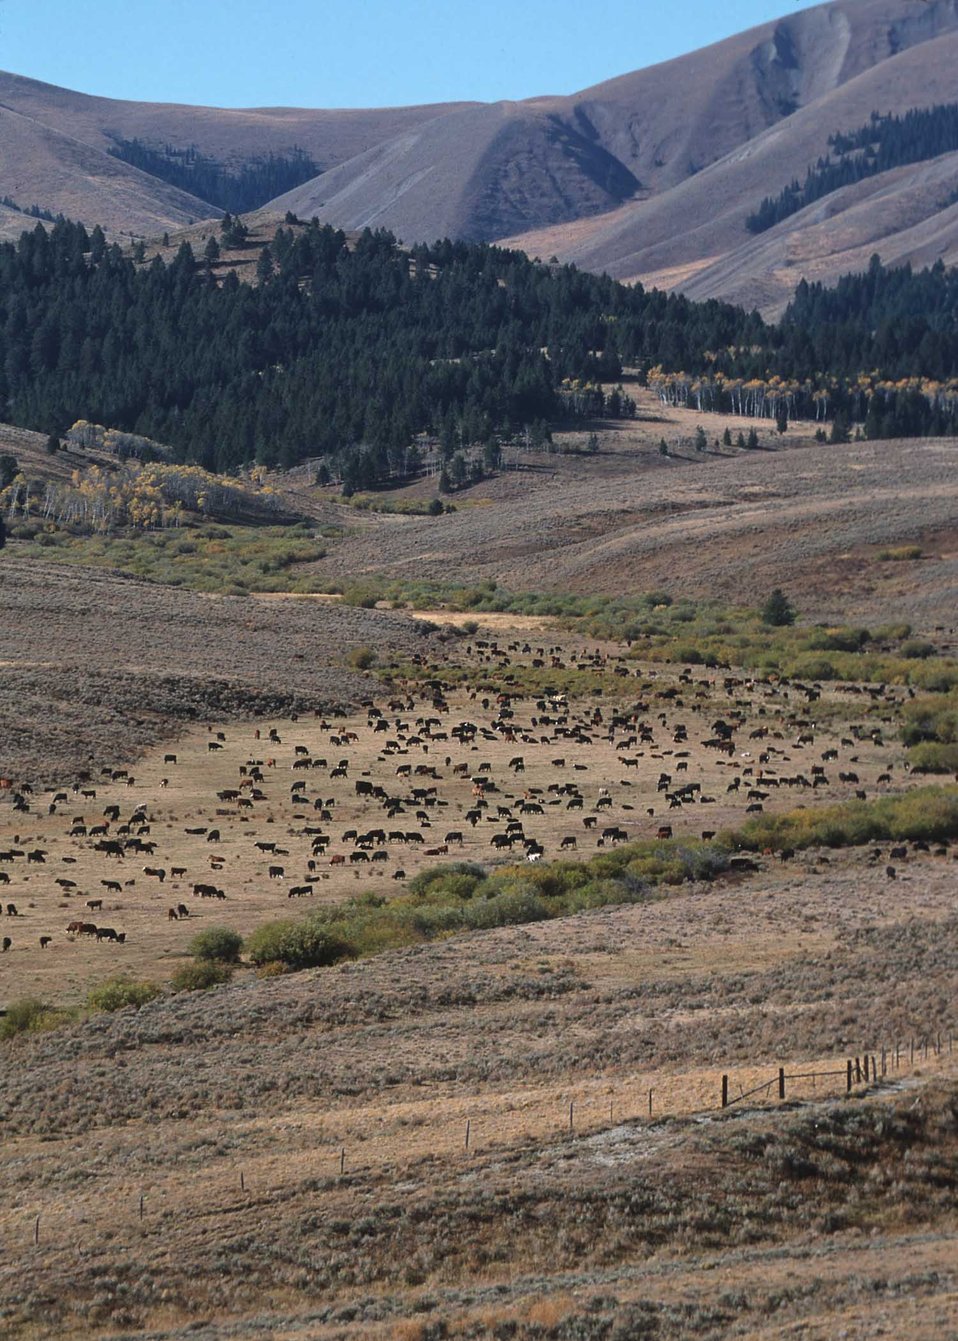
Rangeland in Beaverhead County under rotational grazing system.